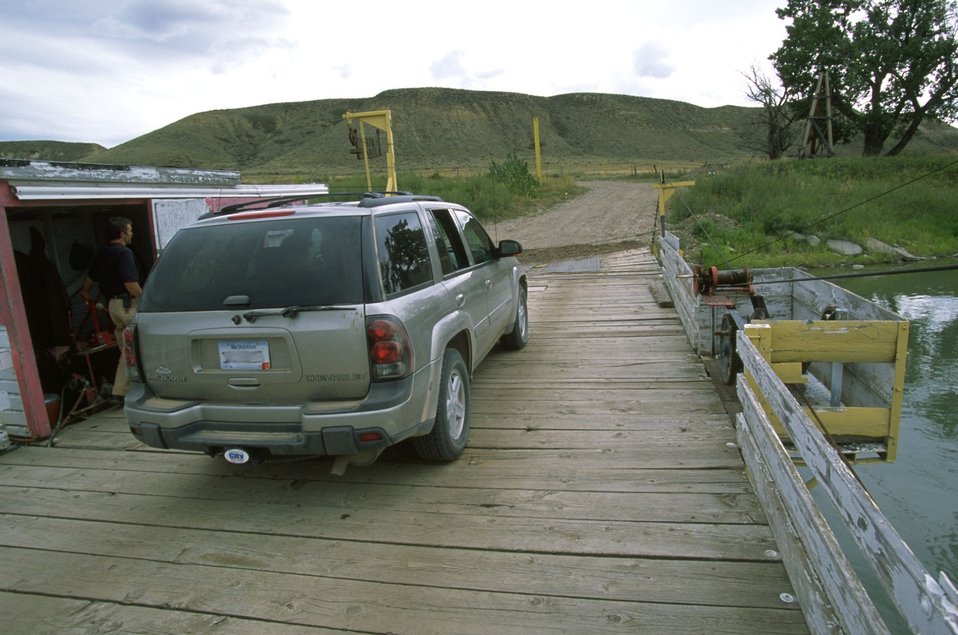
Stafford Ferry across the Upper Missouri River